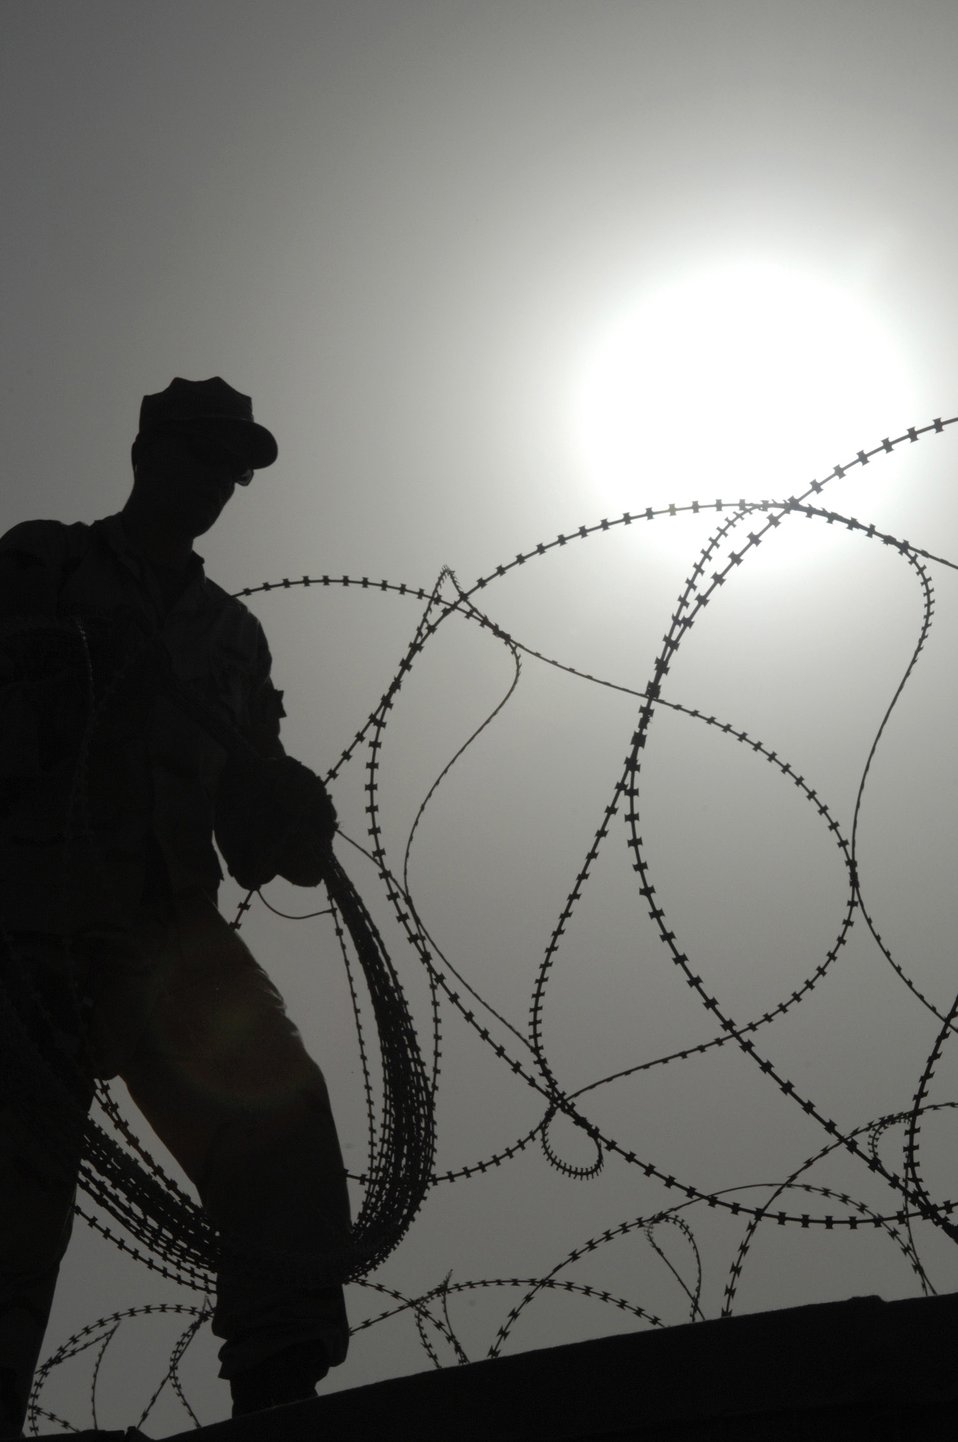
Wired for sound protection

A member of the 407th Expeditionary Security Forces Squadron's Force Protection Flight carries concertina wire June 8 that his team is installing on a wall to protect one of the compounds on Ali Air Base, Iraq. The flight is responsible for monitoring local and third country nationals to detect suspicious activity, augmenting security forces during increased threat levels, as well as monitoring and maintaining installation security measures.